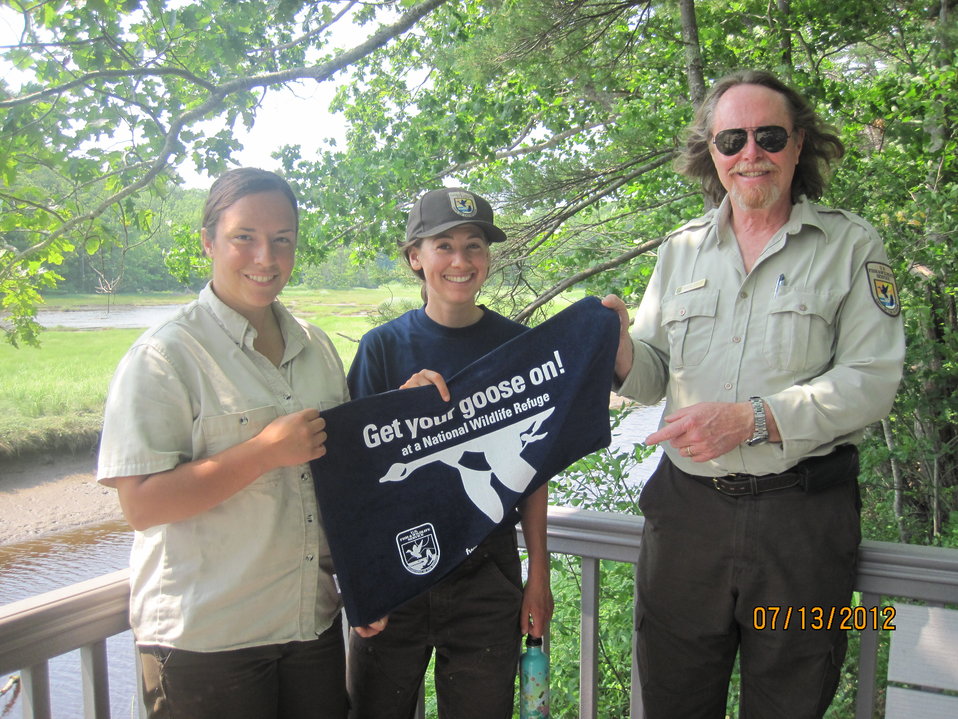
Get Your Goose On!

USFWS employees can barely contain their excitement for GYGO!

Photo Credit: bri Rudinsky/USFWS